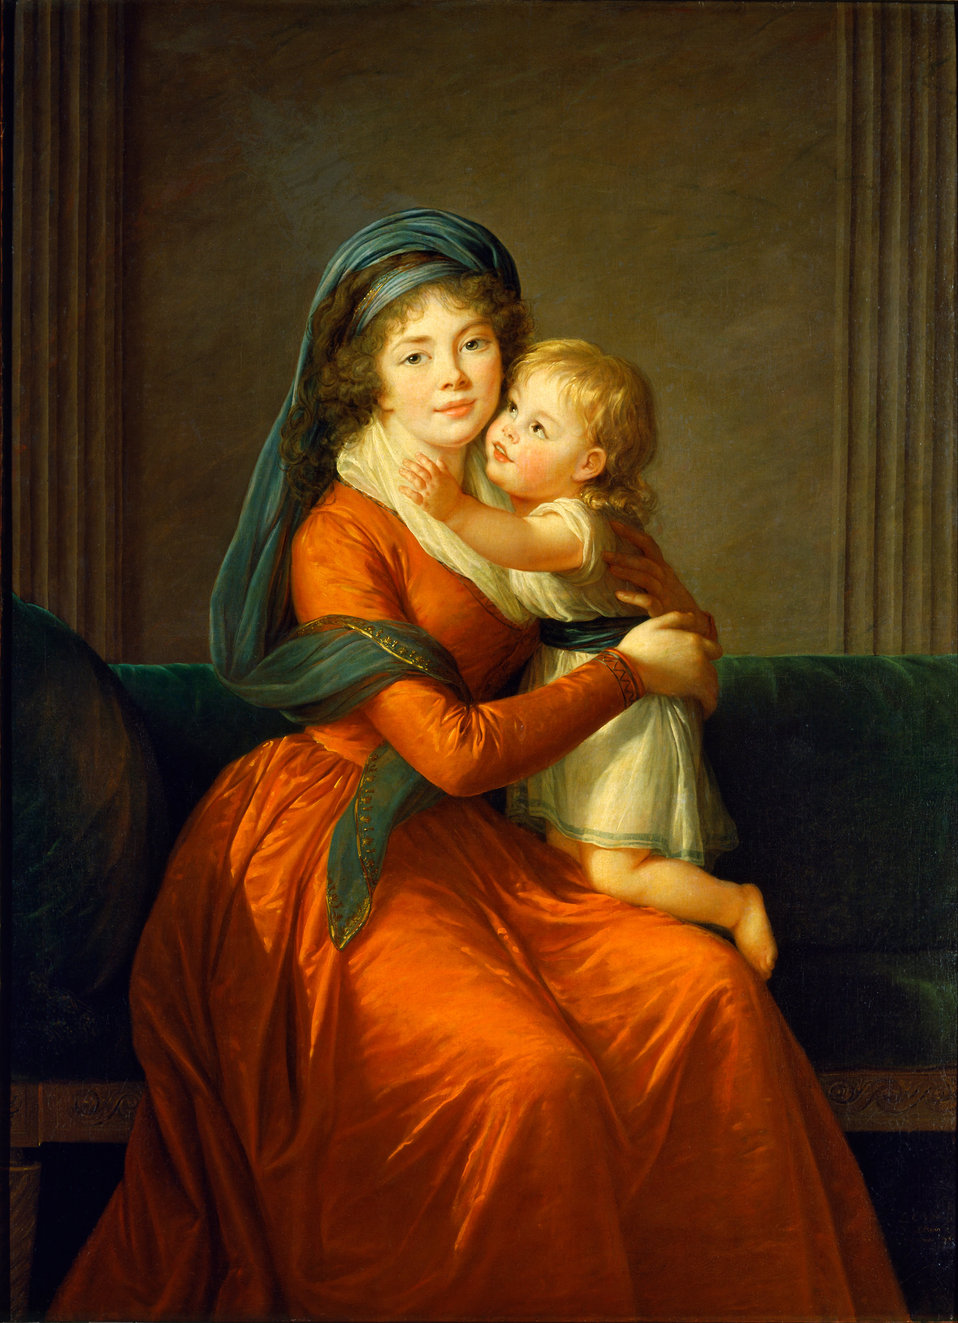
Elisabeth Vigee-Lebrun - Portrait of princess Alexandra Golitsyna and her son Piotr - Google Art Project